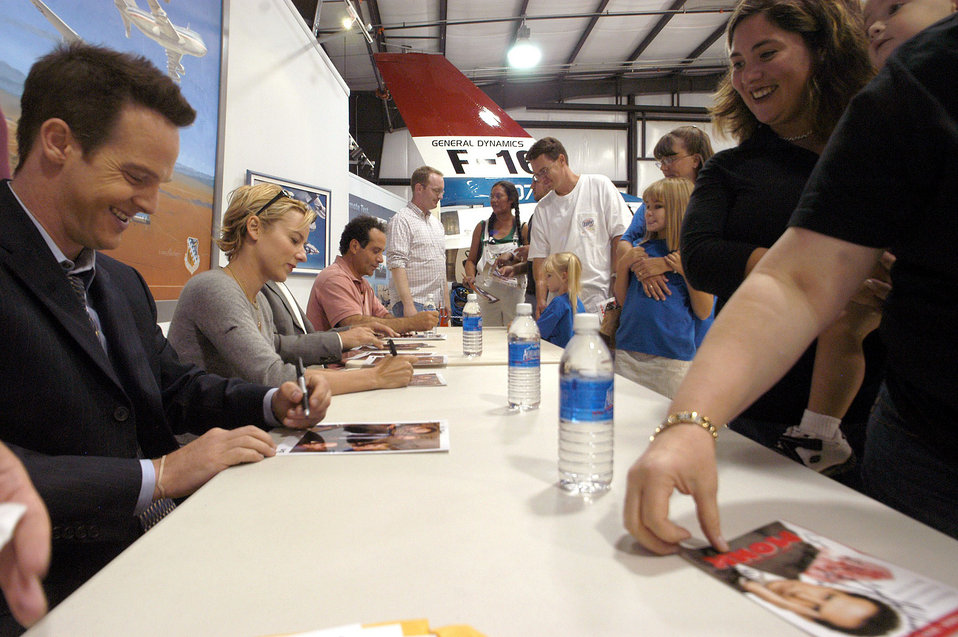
Edwards Airmen help 'Monk' solve mystery

EDWARDS AIR FORCE BASE, Calif. -- More than 200 people received autographs from the cast of NBC Universal and USA Network's show